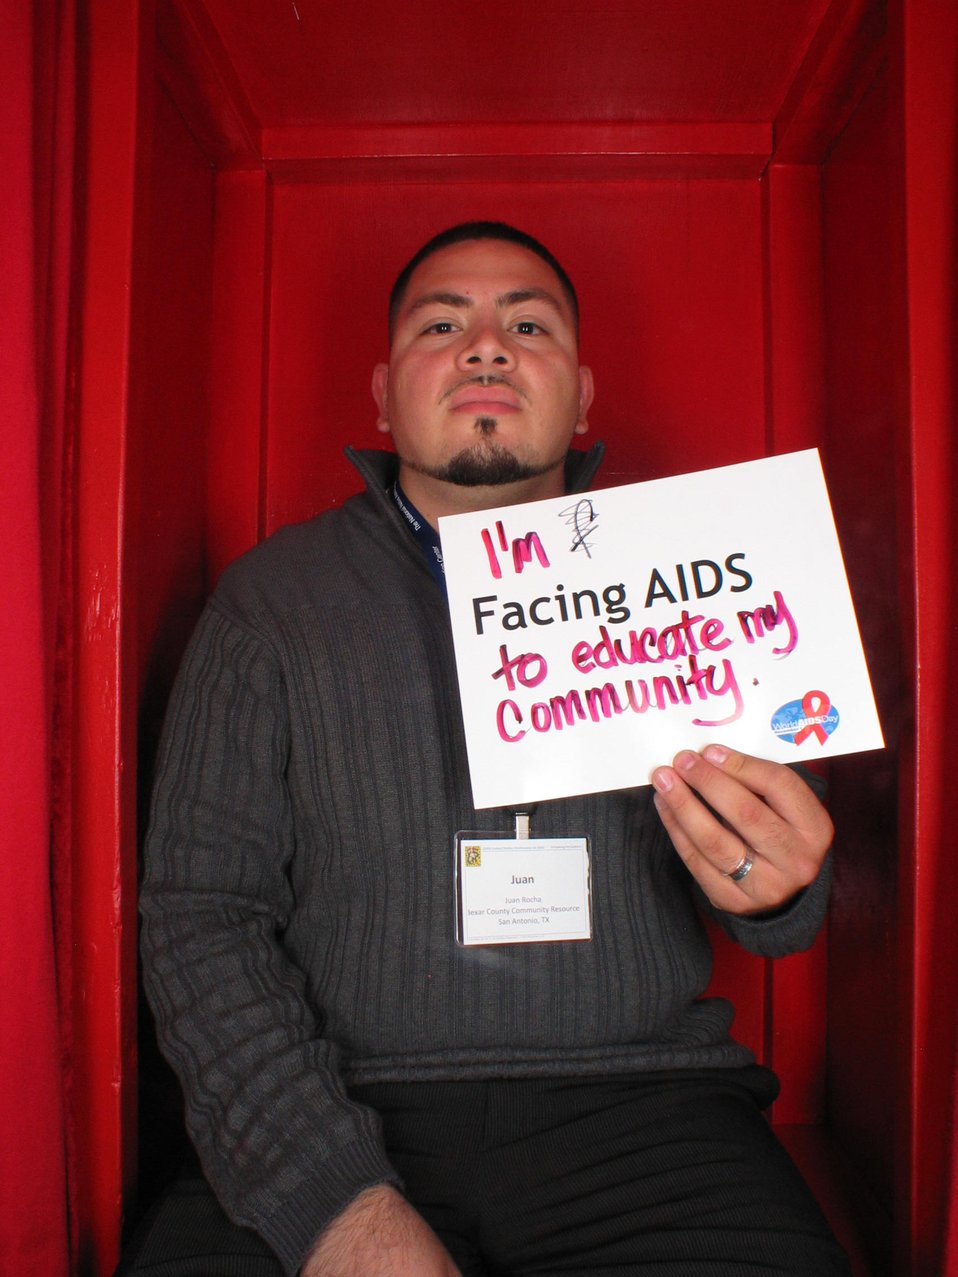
I'm Facing AIDS to educate my community.